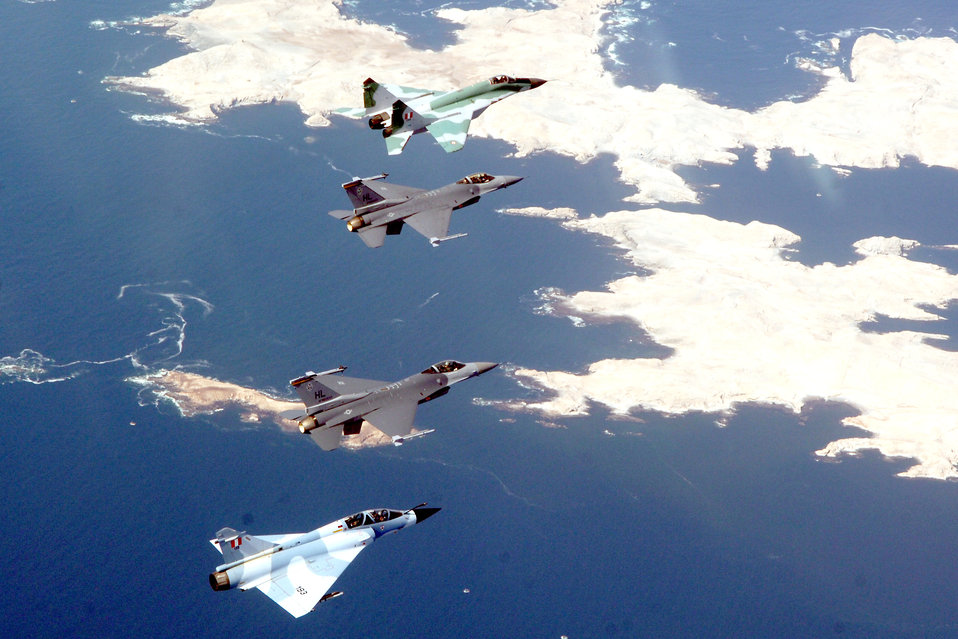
Airmen work alongside Peruvian military during joint exercise

Two F-16 Fighting Falcons form up with a Peruvian MiG-29 and Mirage 2000 during dissimilar air combat training Feb. 15 as part of Falcon and Condor 2007, a joint exercise between the U.S. and Peruvian Air Forces. The exercise allows the U.S. military to build relationships with military and civilian leaders of Peru. The F-16s are from the 34th Fighter Squadron at Hill Air Force Base, Utah.